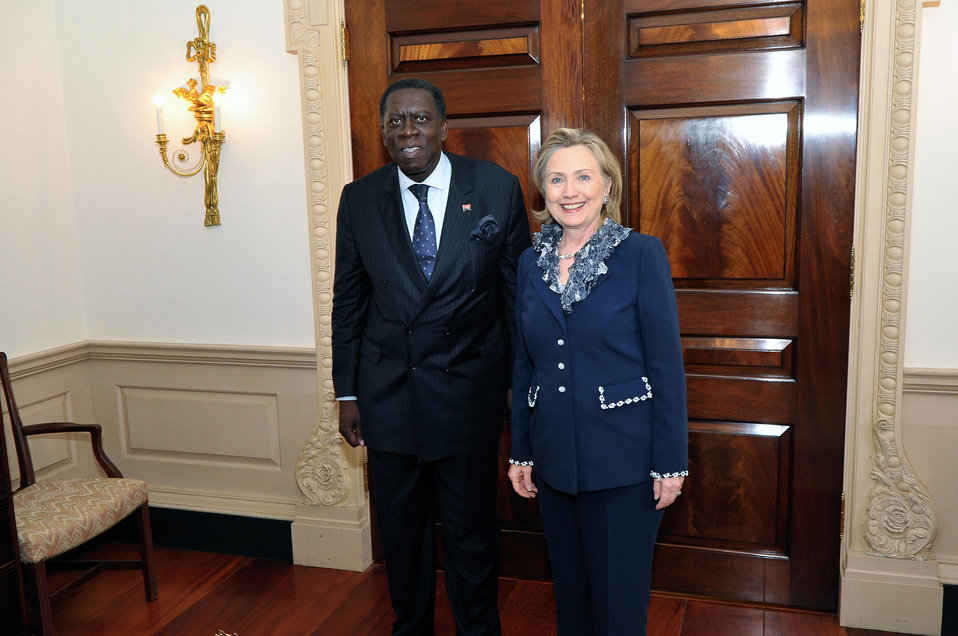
Secretary Clinton Holds a Bilateral Meeting With Angolan Foreign Minister Asuncao Afonso dos Anjos

U.S. Secretary of State Hillary Rodham Clinton holds a bilateral meeting with Angolan Foreign Minister Asuncao Afonso dos Anjos at the U.S. Department of State in Washington, D.C., on July 8, 2010.